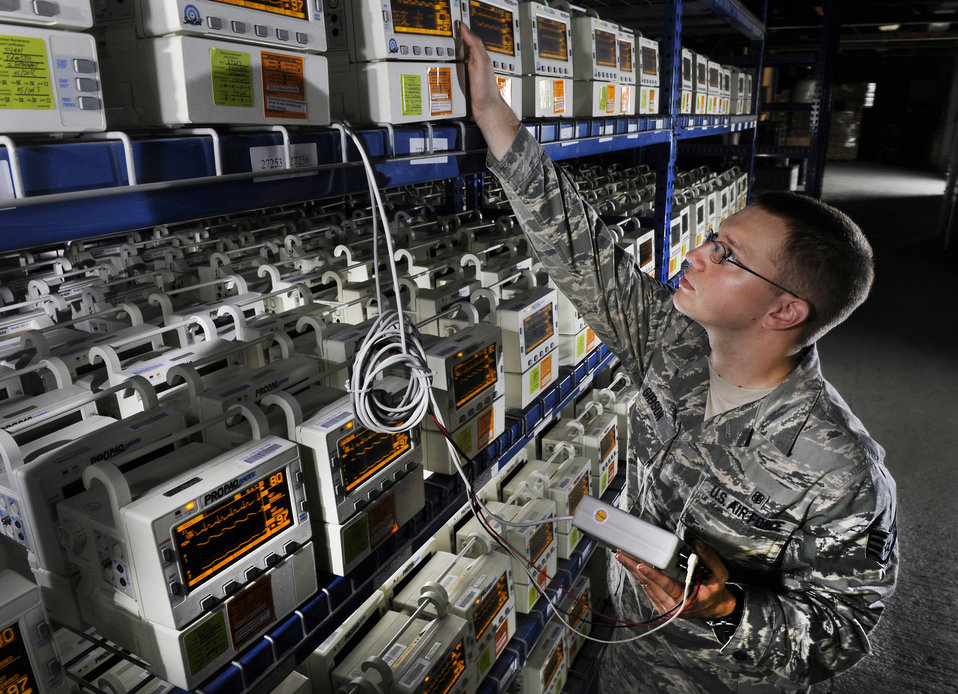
Medical

Staff Sgt. Caleb Gibson uses a patient simulator equipment to check Propaq Encore monitors at Joint Base Andrews, Md., Aug. 15, 2012. Gibson is a biomedical equipment technician assigned to the Medical Logistics Flight of the 779th Medical Support Squadron.